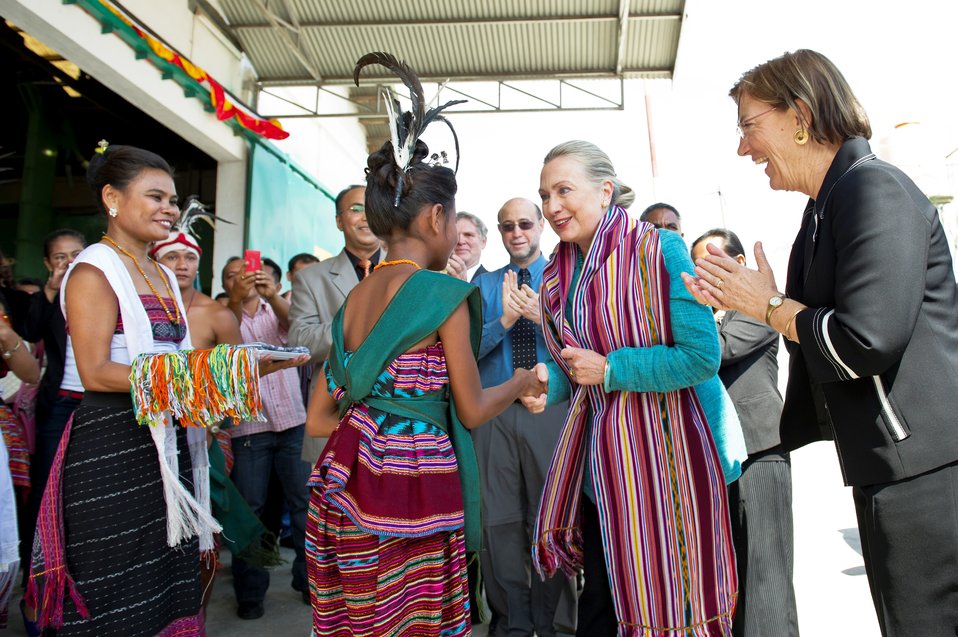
Secretary Clinton and Ambassador Fergin Are Greeted By Traditional Dancers

U.S. Secretary of State Hillary Clinton, accompanied by U.S. Ambassador to Timor-Leste Judith R. Fergin, is greeted by traditional dancers at the Cooperativa Cafe Timor in Dili, Timor-Leste, September 6, 2012. Established in 1994 with the support of USAID, the self-supporting cooperative has now expanded to vanilla, clove, cacao, and cassava production for export.